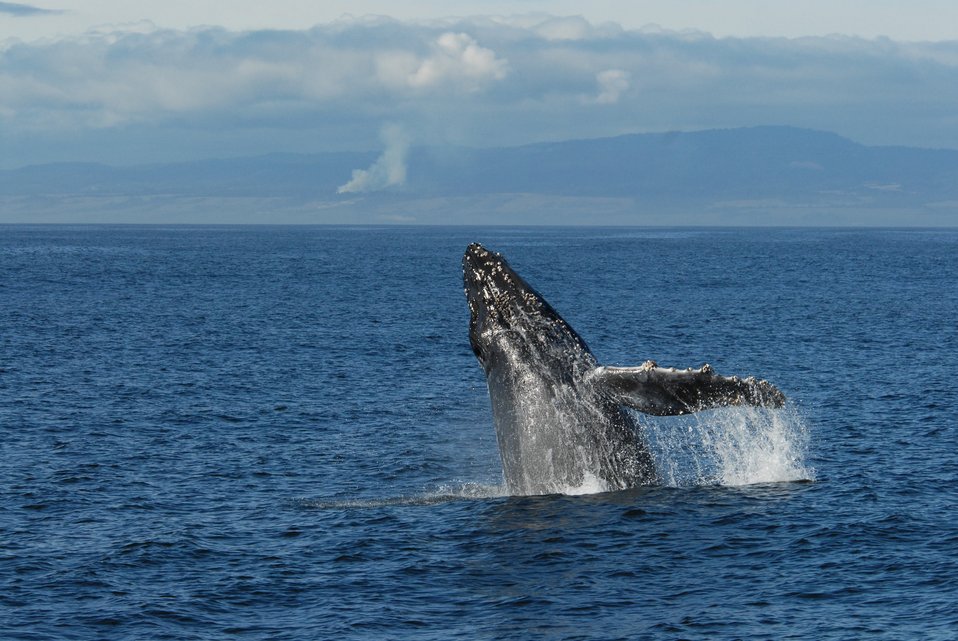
Humpback whale breaching